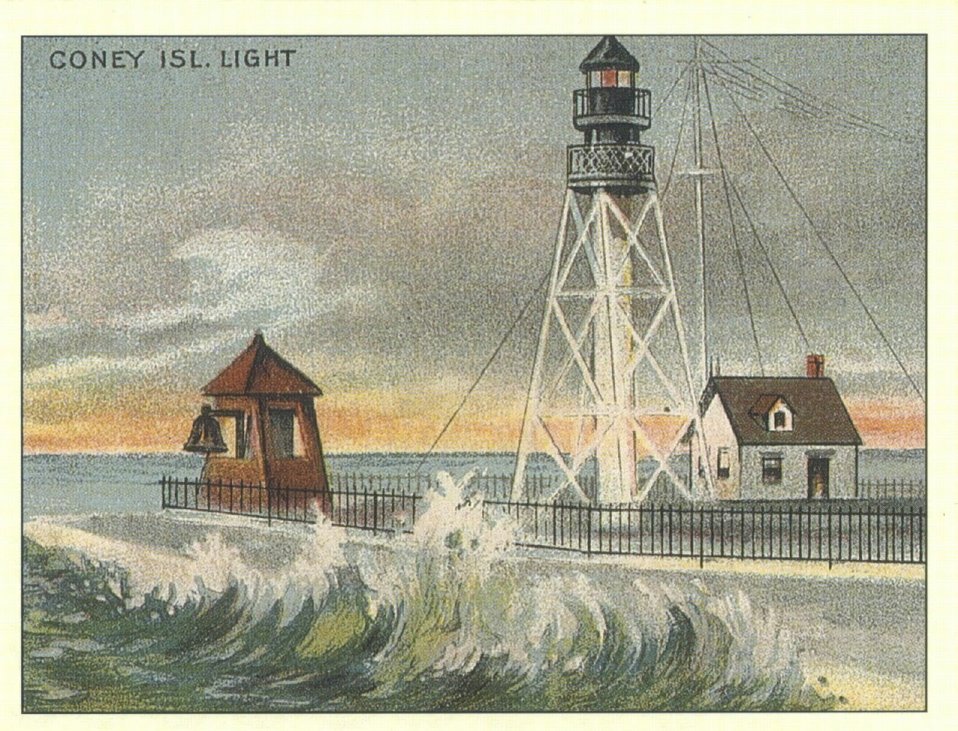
Coney Island Light